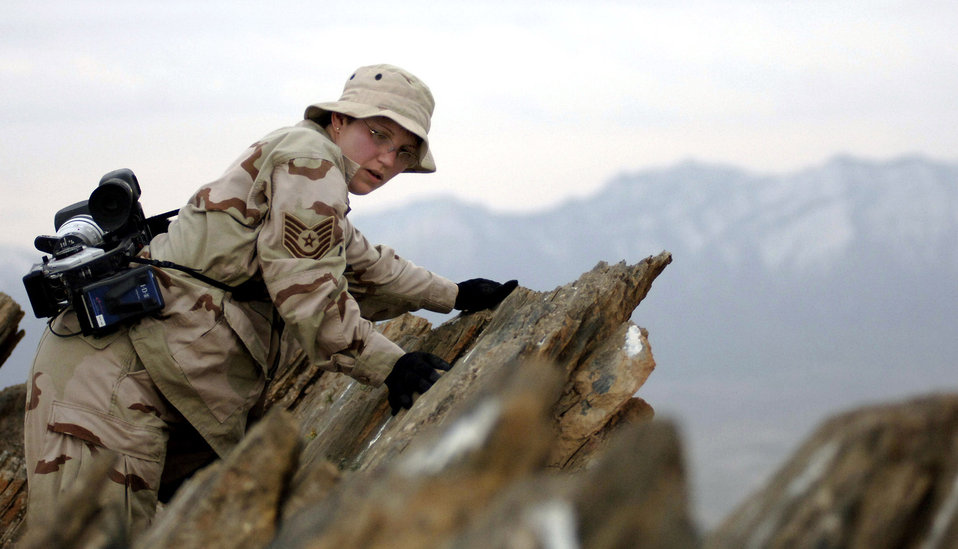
Inching along the narrow trail

Tech. Sgt. Melanie Adams climbs a mountain March 30 near Kabul, Afghanistan, called the